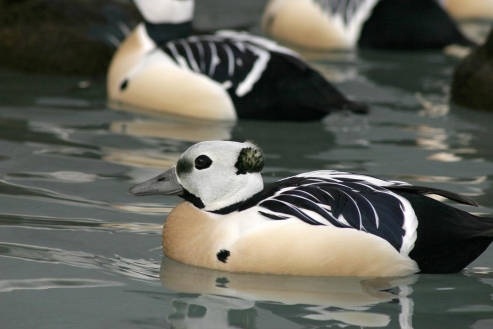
Stellers Eider Male